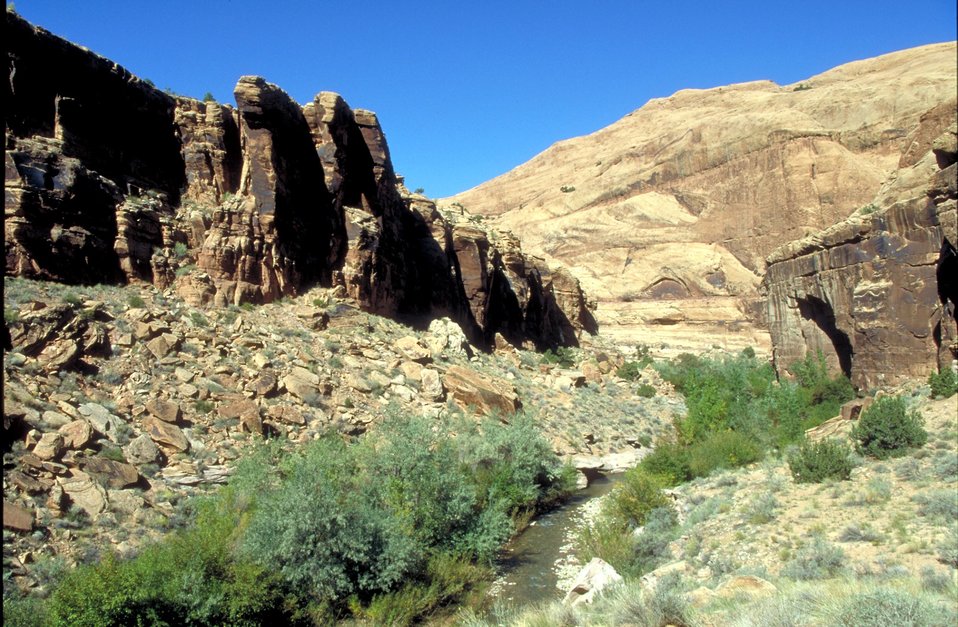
South fork of Mill Creek near Moab, Utah.